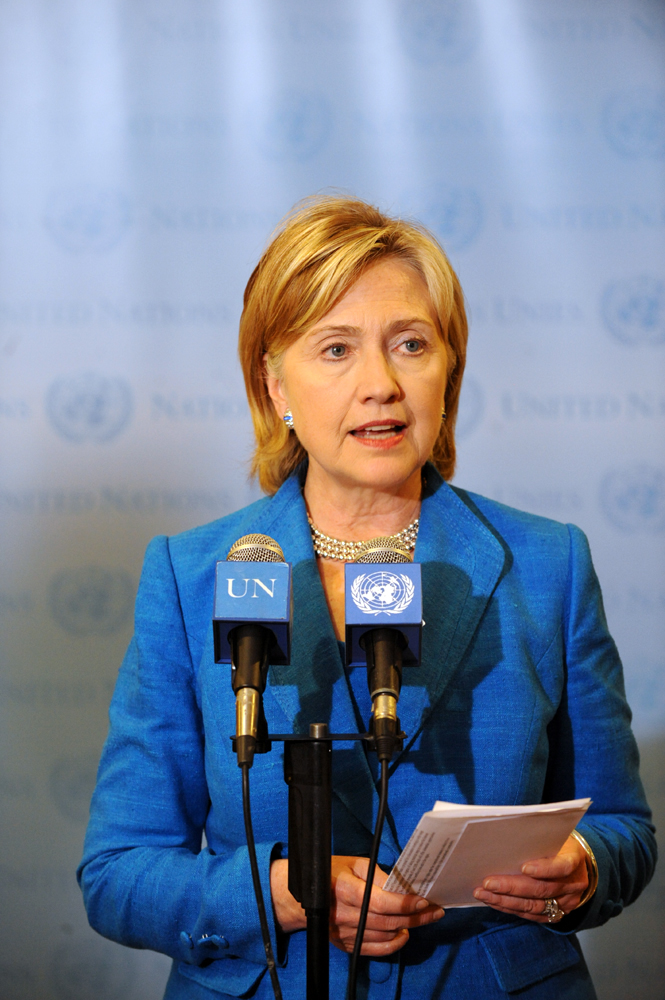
UNGA 2009: P5 1 Meeting

U.S. Secretary of State Hillary Rodham Clinton addresses the press following of a P5 1 meeting at the UN headquarters during the 64th Session of the UN General Assembly in New York City, New York September 23, 2009.